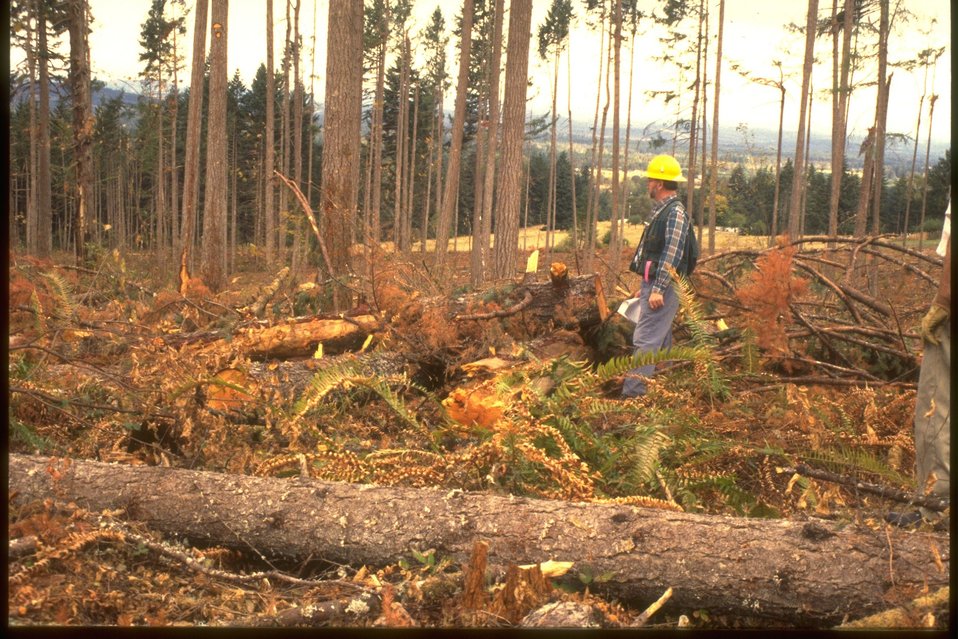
Density Management Thinning in the forest.